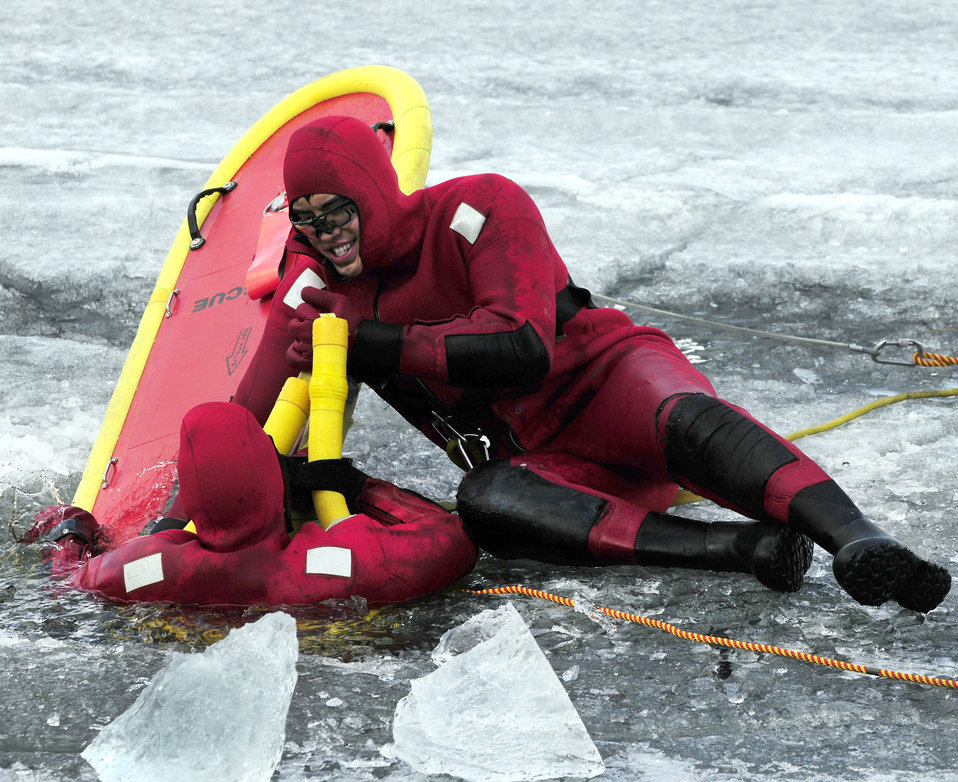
Firefighters train in icy lake

Airman 1st Class David Piasecki climbs out of a frozen lake onto a life raft that Senior Airman Bao Hoang stabilizes with his body during icy water rescue training May 6, 2011, at Eielson Air Force Base, Alaska. Airmen Hoang and Piasecki are fire fighters assigned to the 354th Civil Engineer Squadron Fire Protection Flight.